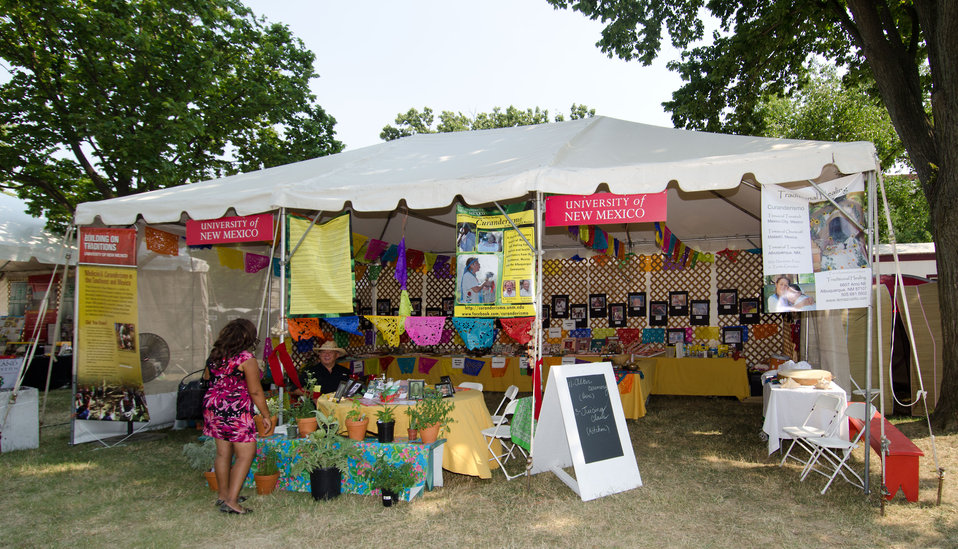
University of New Mexico highlights traditional folk healing during the 2012 Smithsonian Folklife Festival, on the National Mall in Washington, D.C. on Friday, June 29, 2012 Near by is the Mississippi State University Mobile Veterinary Clinic that serves the Northern Mississippi area by providing Spay and neuter services to those in need, and provides medical experience for students. One of the three themes this year is “Campus and Community.” It celebrates the 150 years of the USDA and the Land-Grant University System. The U.S. Department of Agriculture (USDA) and the Land-Grant system extend education across the country, contributing to American agriculture success and rural prosperity. “Campus and Community” has demonstrations, discussions, hands-on activities, and entertainment to that showcase the many ways that this partnership works to improve American agriculture and rural life.